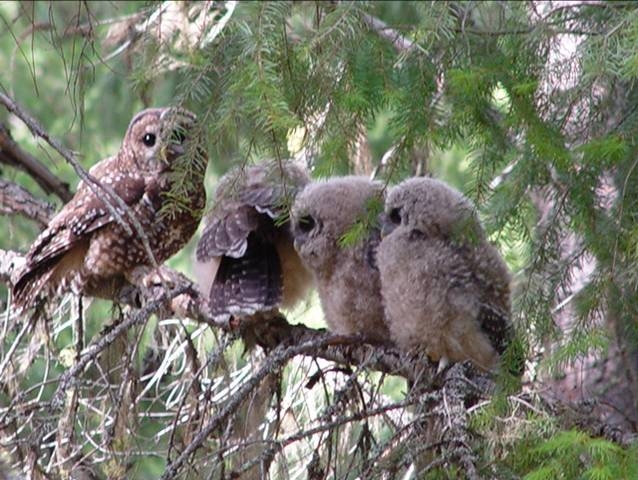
Family of Northern Spotted Owl